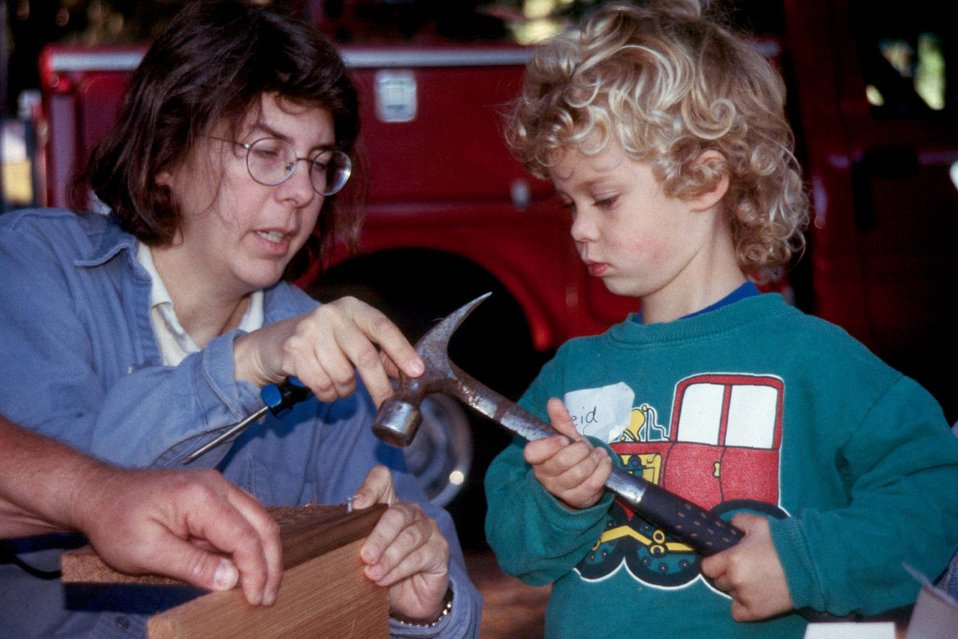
Allison and Reid Center put together a bird box